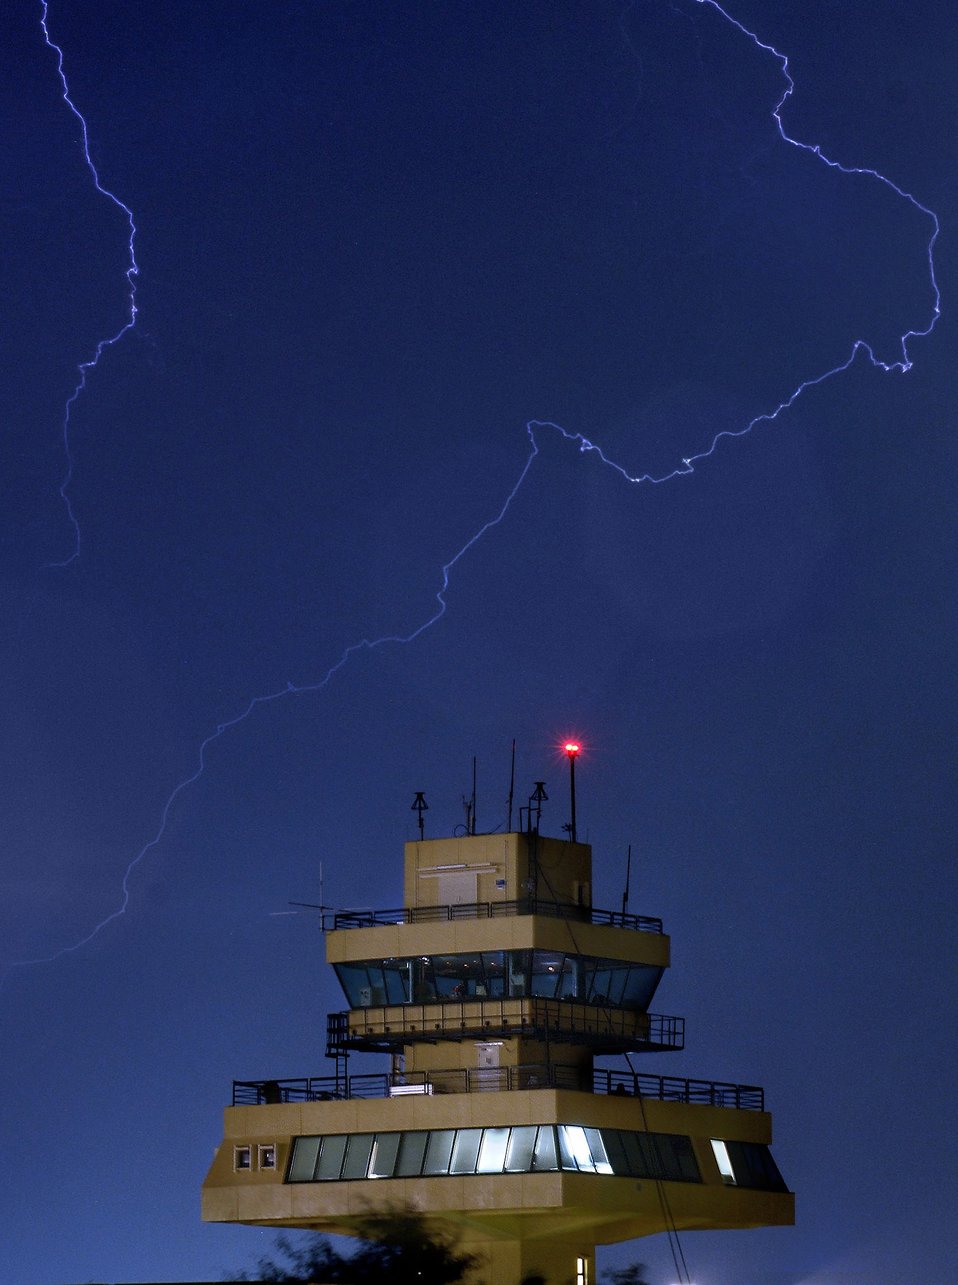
Lightning strikes

BALAD AIR BASE, IRAQ -- Lightning strikes here Jan. 11 over the control tower. Lightning storms are a common occurrence during the rainy season in Iraq.